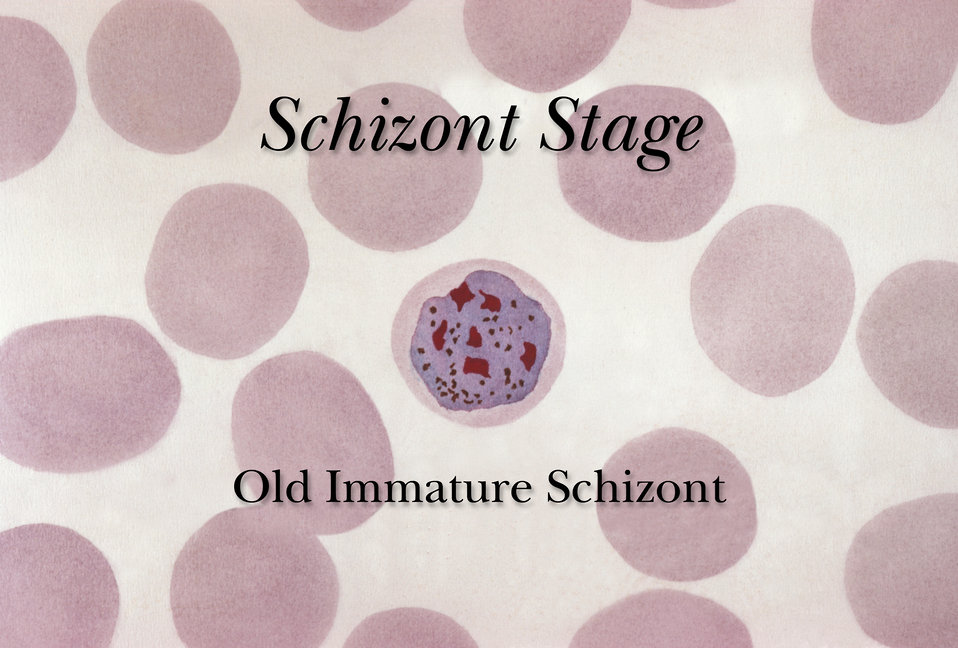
An old, immature erythrocytic schizont during the Plasmodium spp. life cycle.